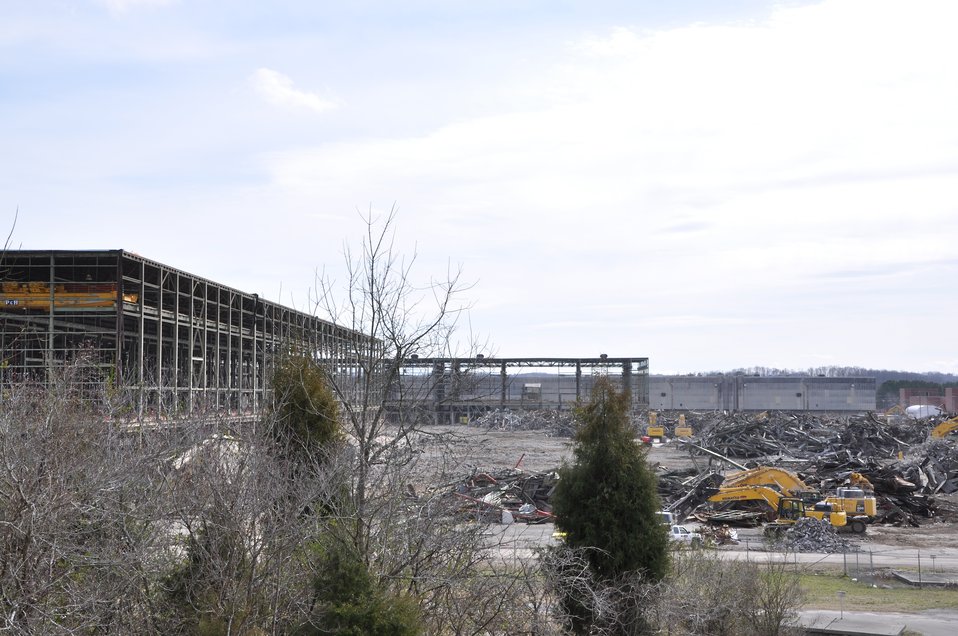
Recovery Act-funded K-33 demolition

Debris from the demolition of Building K-33 is shown
here.